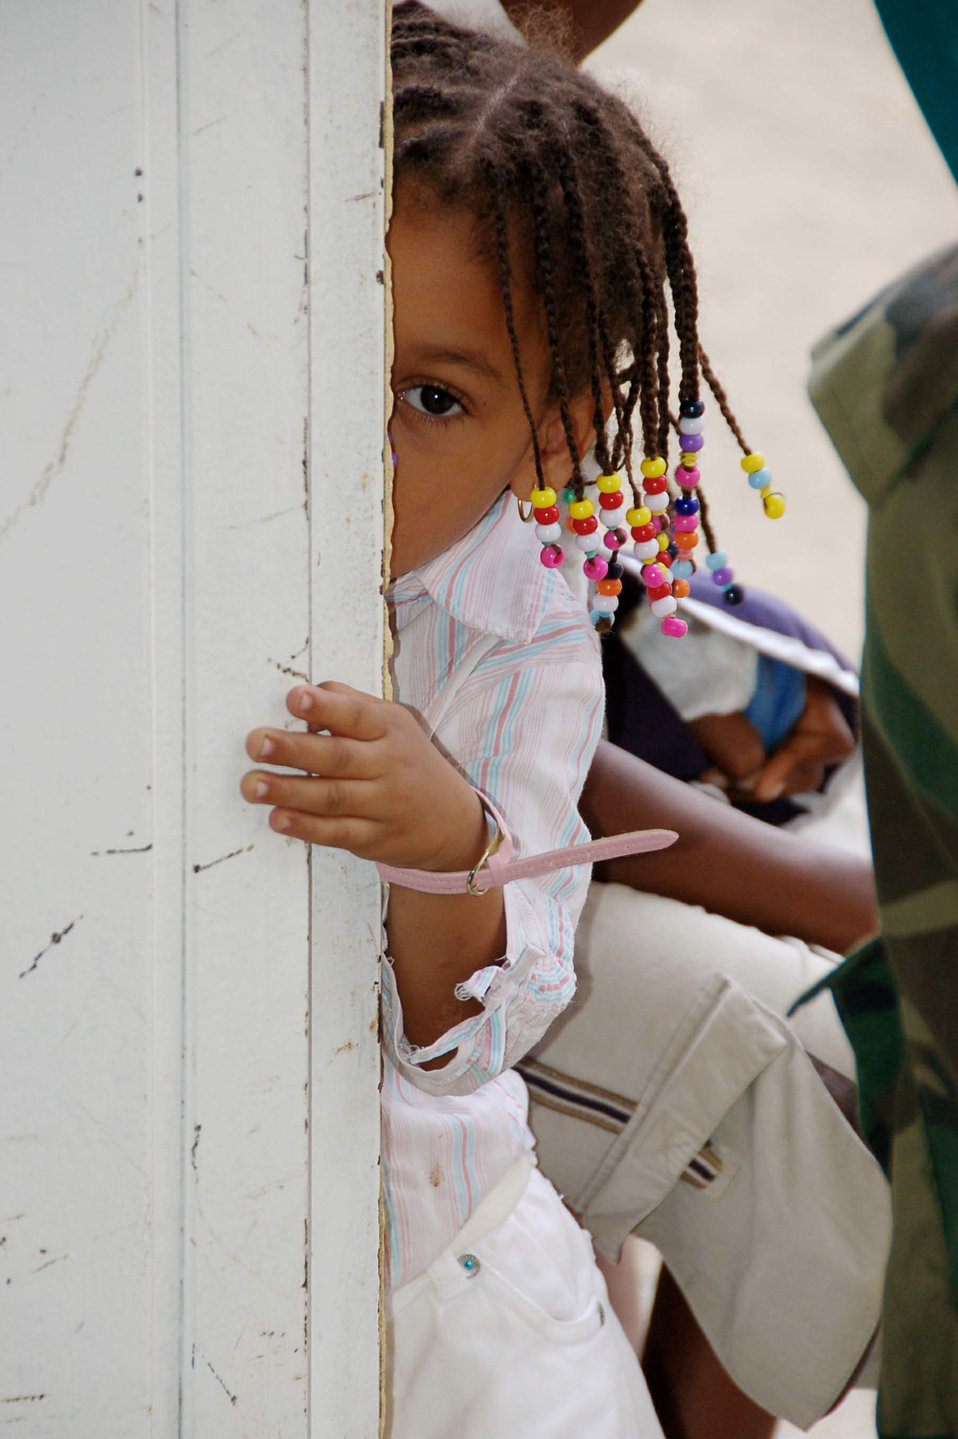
Medics provide care to people in Dominican Republic

A small child cautiously peers into the pediatrician's room while awaiting her turn in line at a temporary clinic April 22 in Hostos, Dom. Rep., during the medical readiness exercise, Beyond the Horizon 2009 - Caribbean. The medics treated 2,800 patients during the first three days of the U.S. Southern Command sponsored MEDRETE.